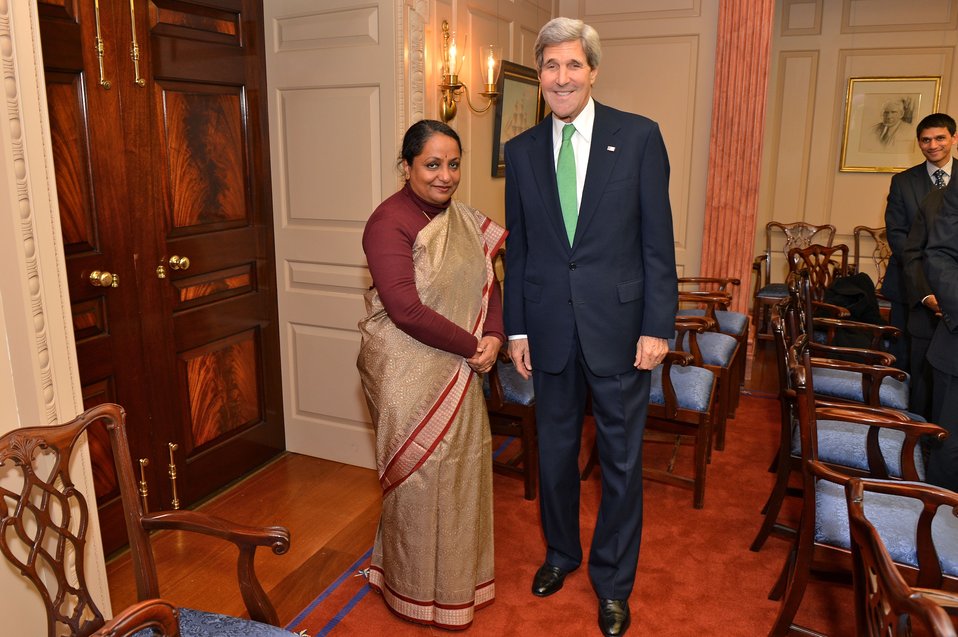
Secretary Kerry Poses for a Photo With Indian Foreign Secretary Singh

U.S. Secretary of State John Kerry poses for a photo with Indian Foreign Secretary Sujatha Singh before their meeting at the U.S. Department of State in Washington, D.C., on December 10, 2013.